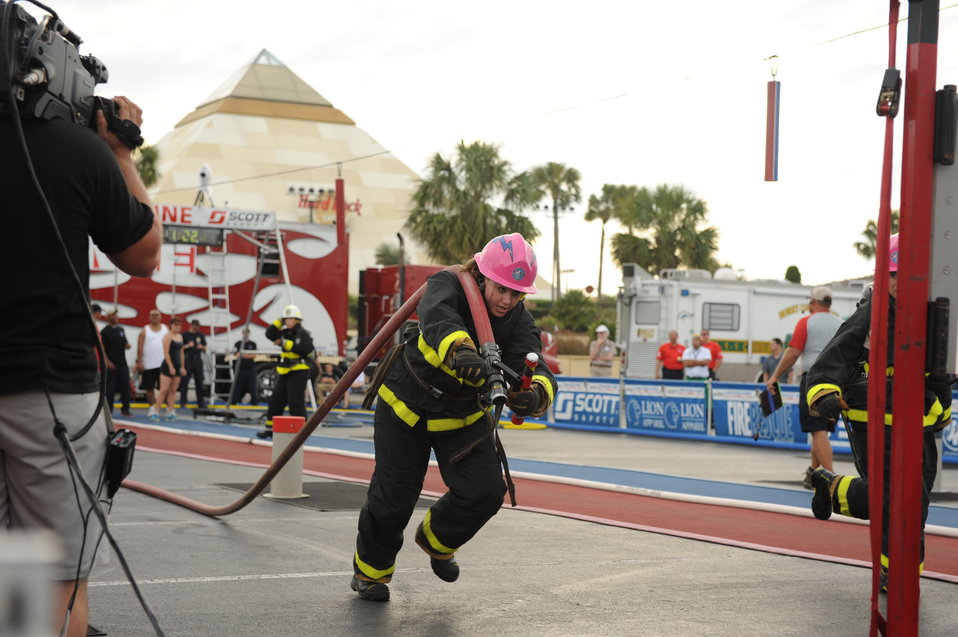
World Firefighter Combat Challenge

Senior Airman Jessica Condon of the U.S. Air Force Academy Fire Department drags a fire hose 75 feet Nov. 16, 2011, at the World Firefighter Combat Challenge XX in Myrtle Beach, S.C.